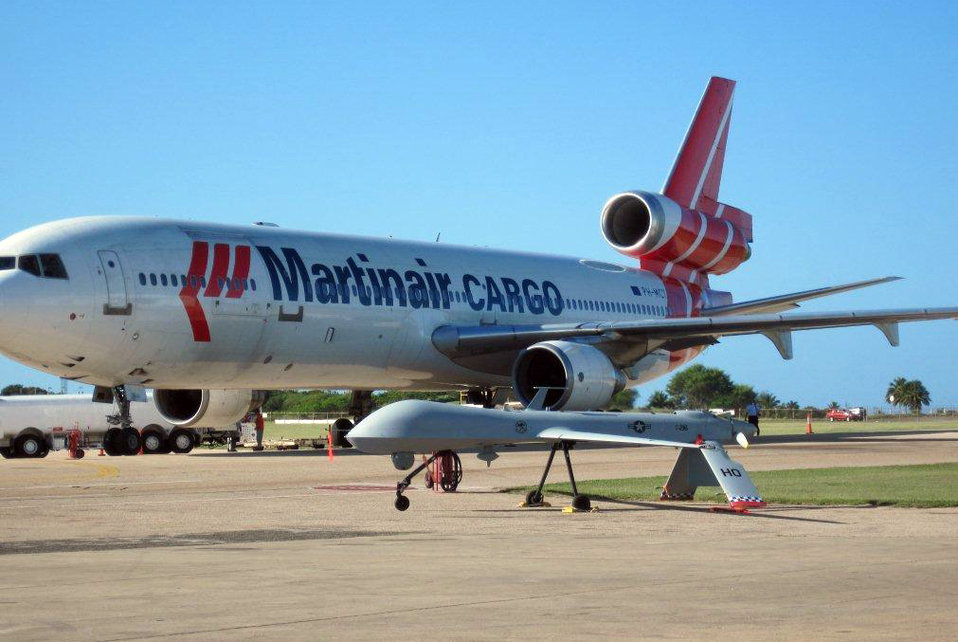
An RQ-1 Predator from Holloman Air Force Base, N.M., sits next to a cargo aircraft on the flight line at a deployed location recently. A team of remotely piloted aircraft personnel from Holloman is currently deployed in support of Operation Unified Response.